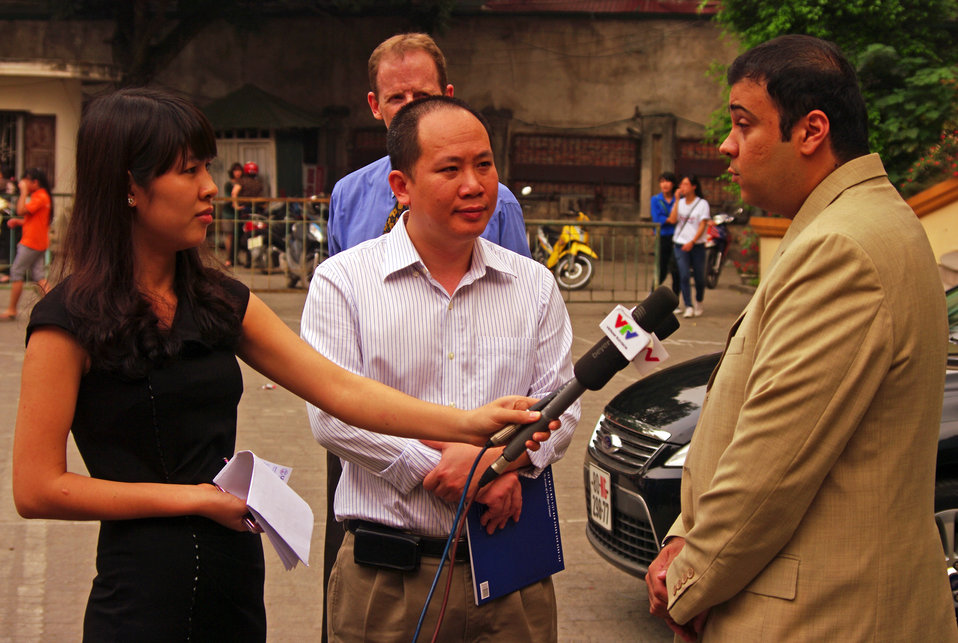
USAID Health Officer Xerses Sidhwa speaks to journalists at Vietnam's World TB Day Event.

March 23, 2013